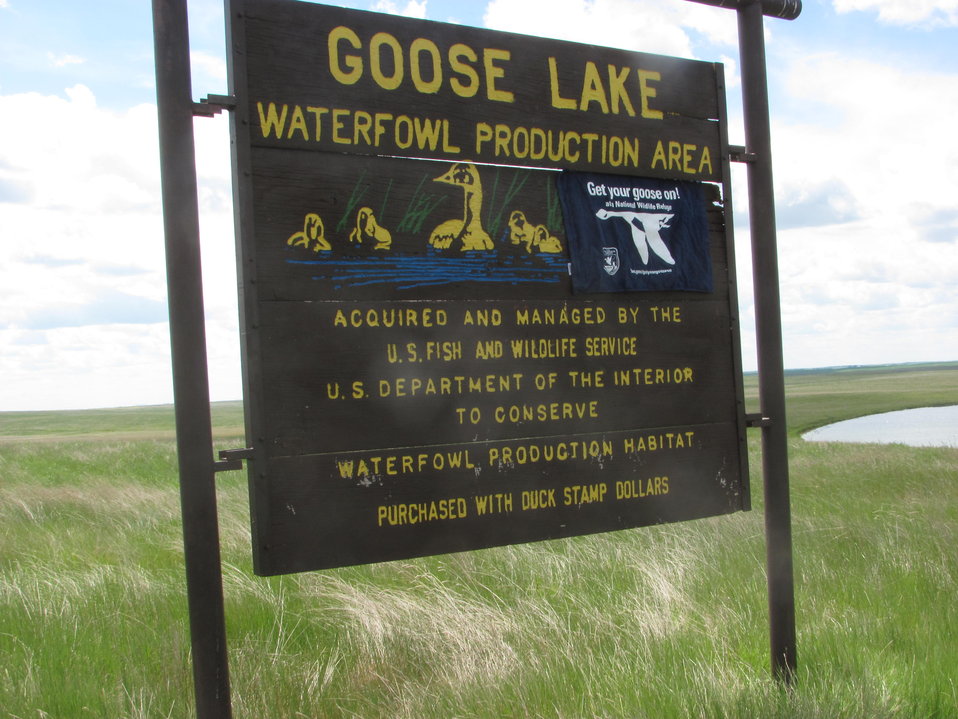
Get Your Goose On!

The Benton Lake National Wildlife Refuge traveling strike team Gets Their Goose On! at Medicine Lake.